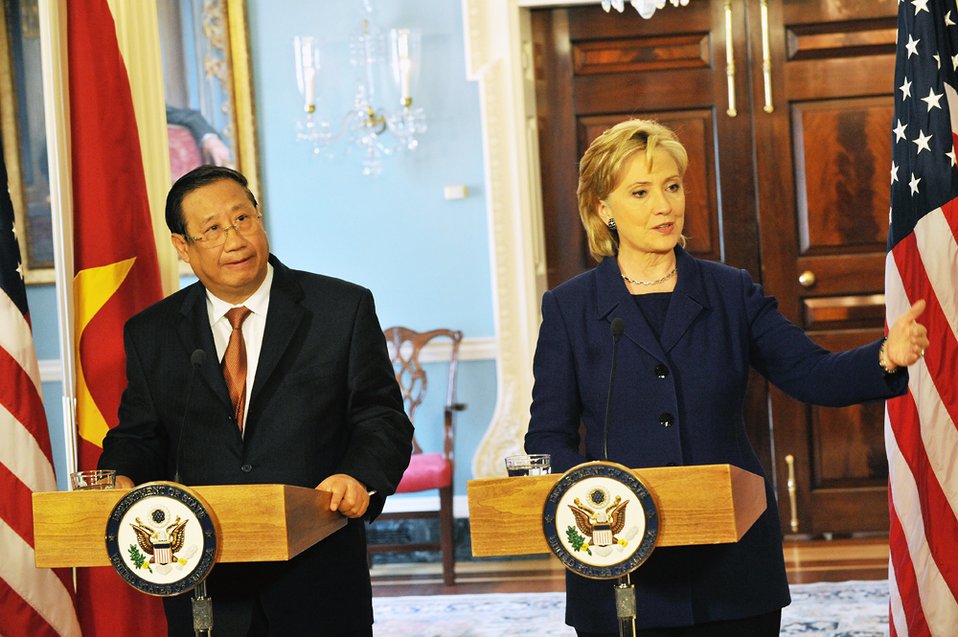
Secretary Clinton Hosts Bilateral With Vietnamese Deputy Prime Minister

U.S. Secretary of State Hillary Rodham Clinton holds a bilateral and joint press availability with H.E. Kheim Pham Gia, Deputy Prime Minister and Minister of Foreign Affairs of the Socialist Republic of Vietnam at the U.S. Department of State, Washington, D.C., October 1, 2009.